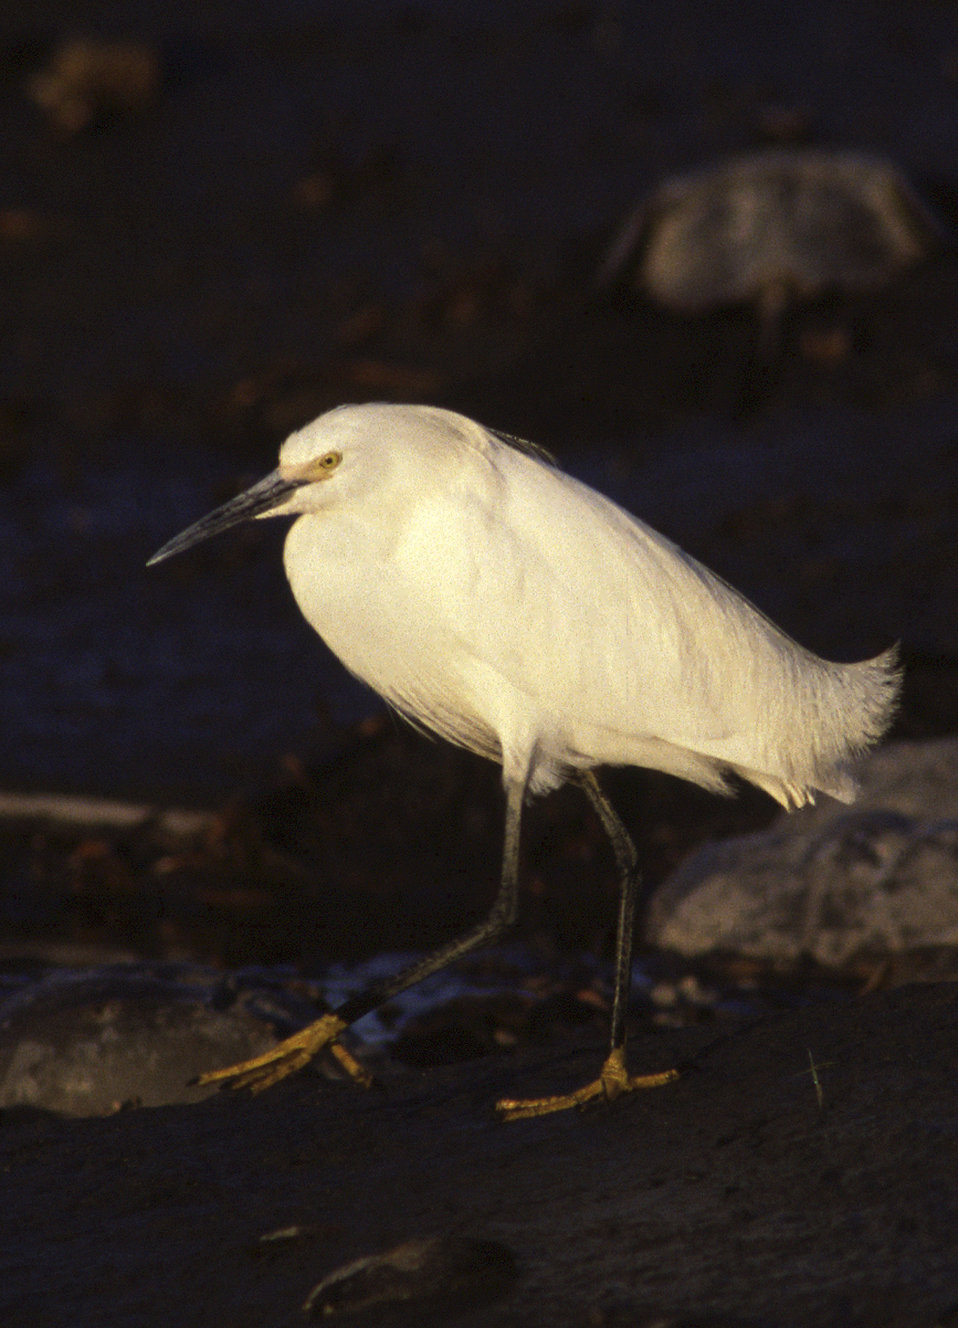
Snowy Egret